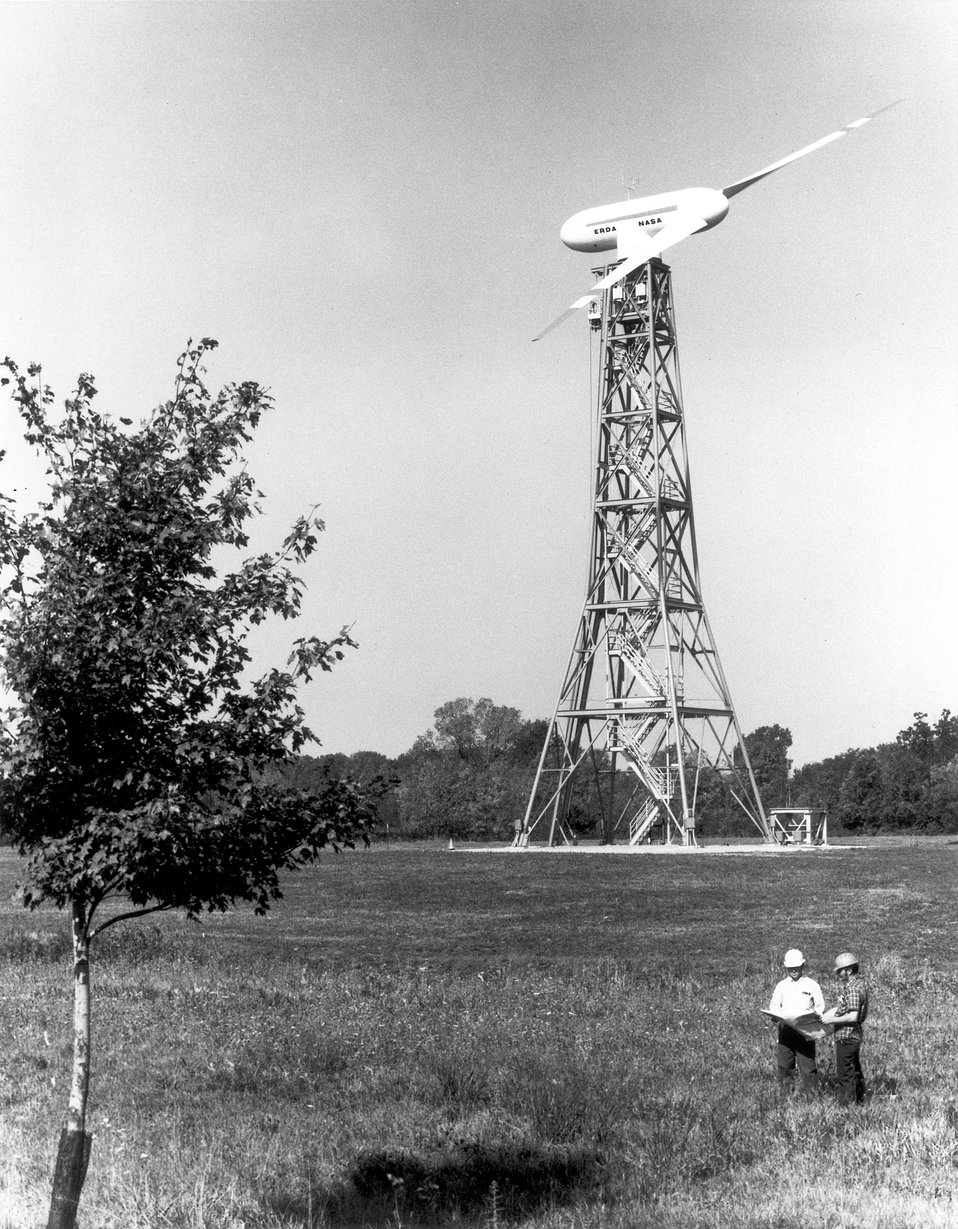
A 125-foot-tall windmill has been developed for the U.S. Department of Energy (DOE) by NASA's Lewis Research Center in Cleveland, Ohio. c. 1975